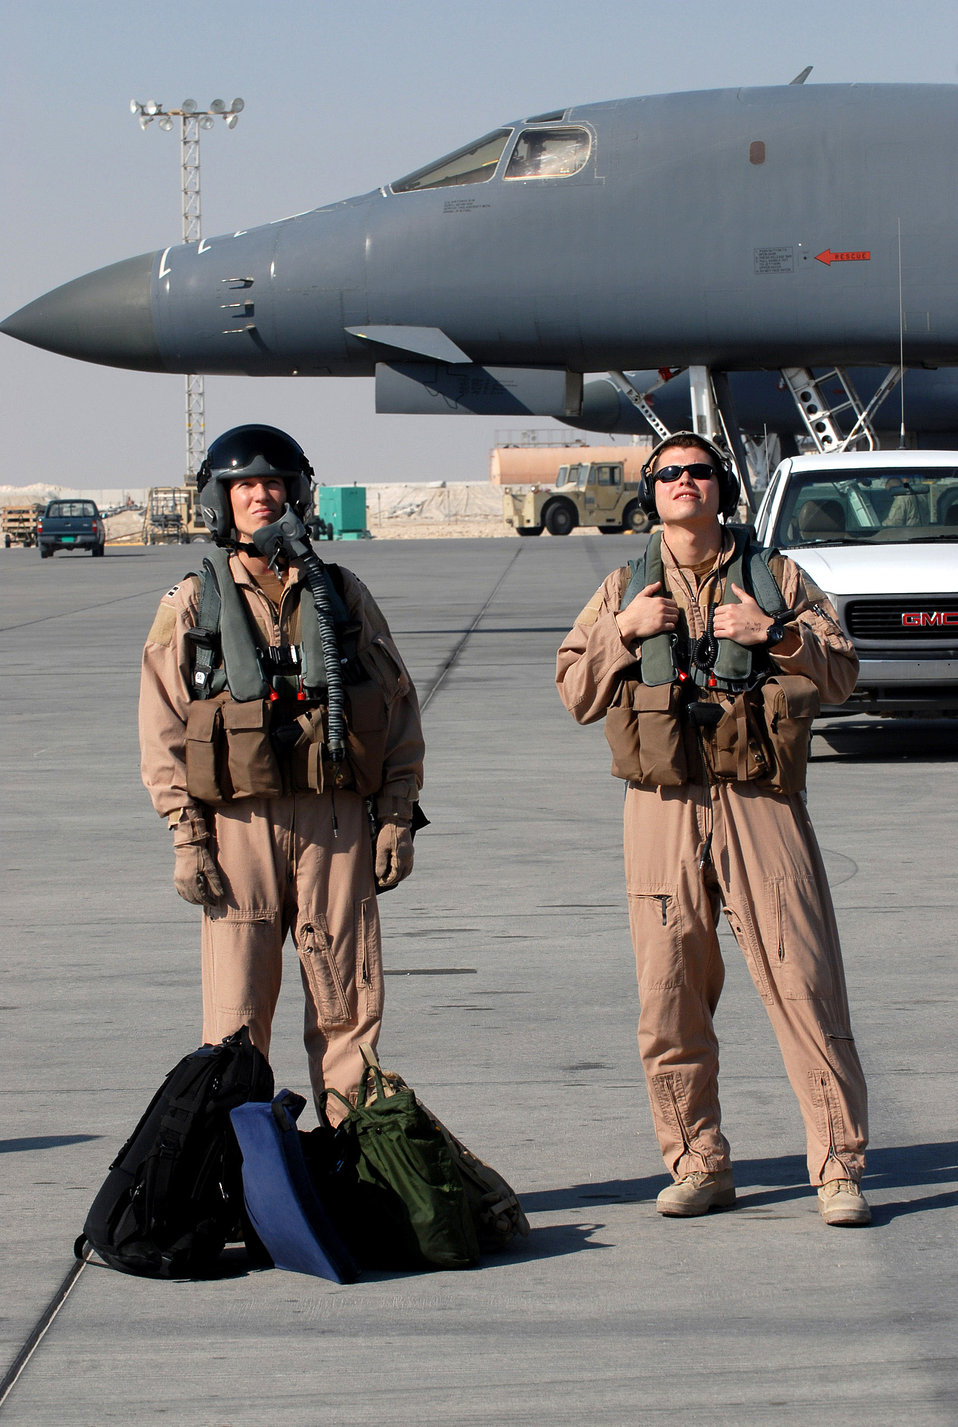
Getting a B-1B ready to launch

Capt.Crystal Powers (left) and 1st Lt. Thomas Walsh wait to board a B-1B Lancer bomber for a mission Dec. 29. Captain Powers and Lieutenant Walsh are with the 9th Expeditionary Bomb Squadron at an air base in Southwest Asia.